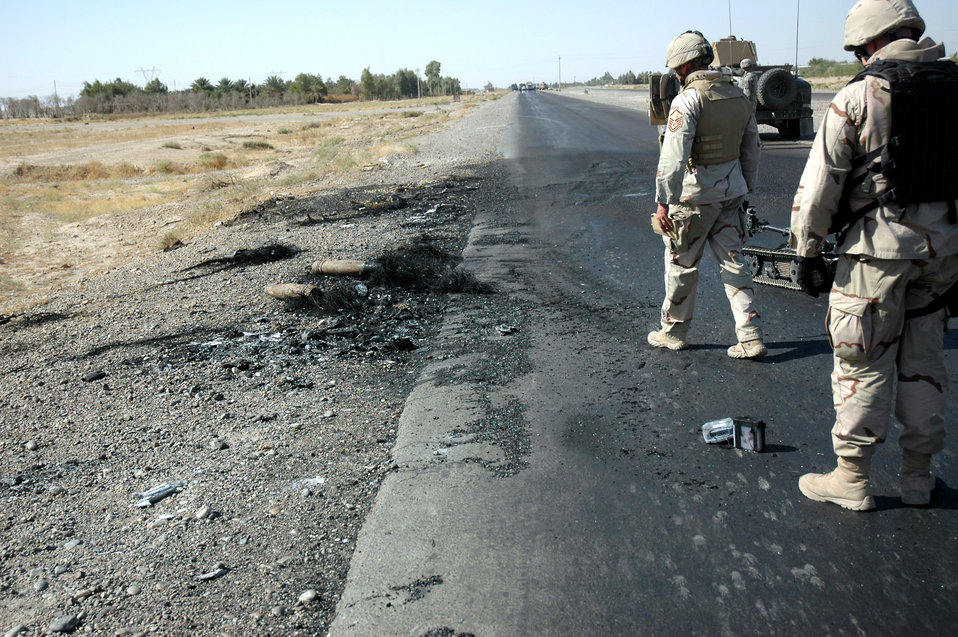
Ordnance Airman awarded Bronze Star for Iraq duty

Waiting for Explosive Ordnance Disposal to confirm the scene is safe, Staff Sgt. Christopher Hawks (front left) and Master Sgt. Albert Schneider (front right), prepares to collect evidence and obtain pictures in Paliwoda, Iraq. The EOD team from Paliwoda and Sergeant Schneider's Weapons Intelligence Team had just arrived at the scene of two improvised explosive devices detonations targeting civilian vehicles on Main Supply Route Tampa.